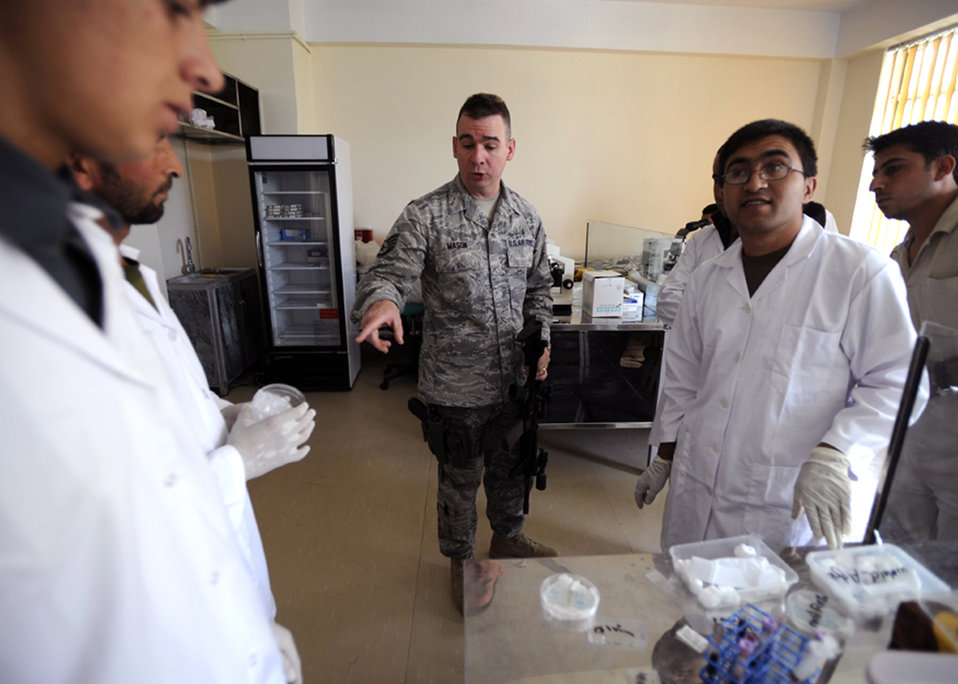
Afghan medical technicians learn lab techniques

Staff Sgt. Cole Mason speaks with students about laboratory techniques Aug. 3, 2009 at the Kabul national military hospital in Kabul, Afghanistan. Sergeant Mason is a Combined Security Transition Command-Afghanistan Military Embedded Training Team mentor.